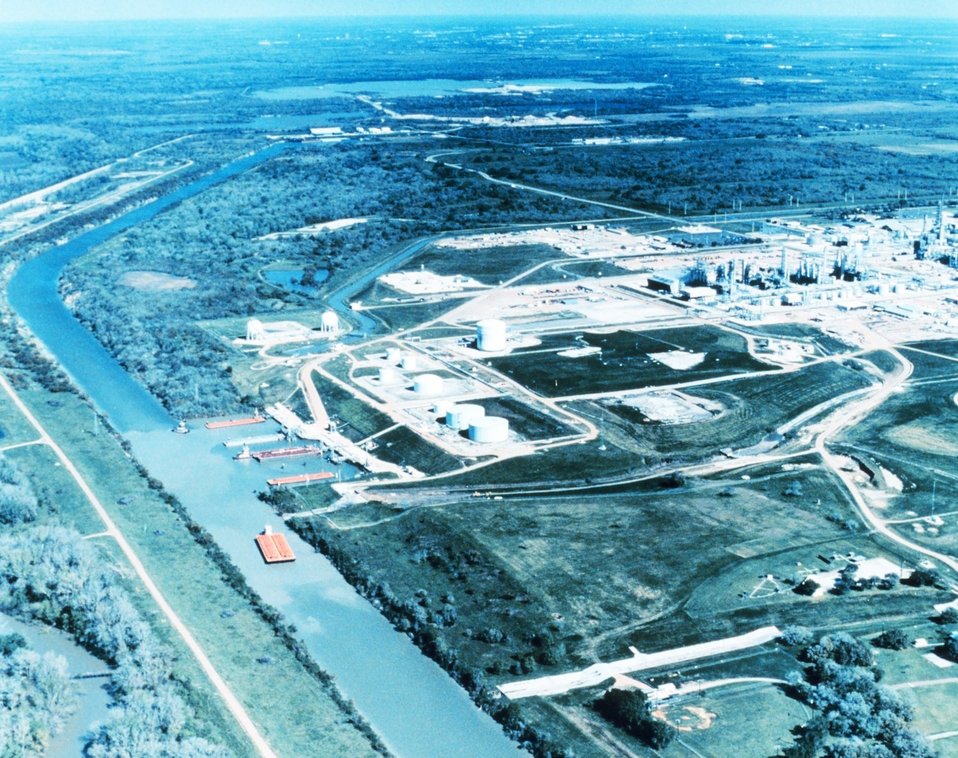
2848 North Latitude 9700 West Longitude.